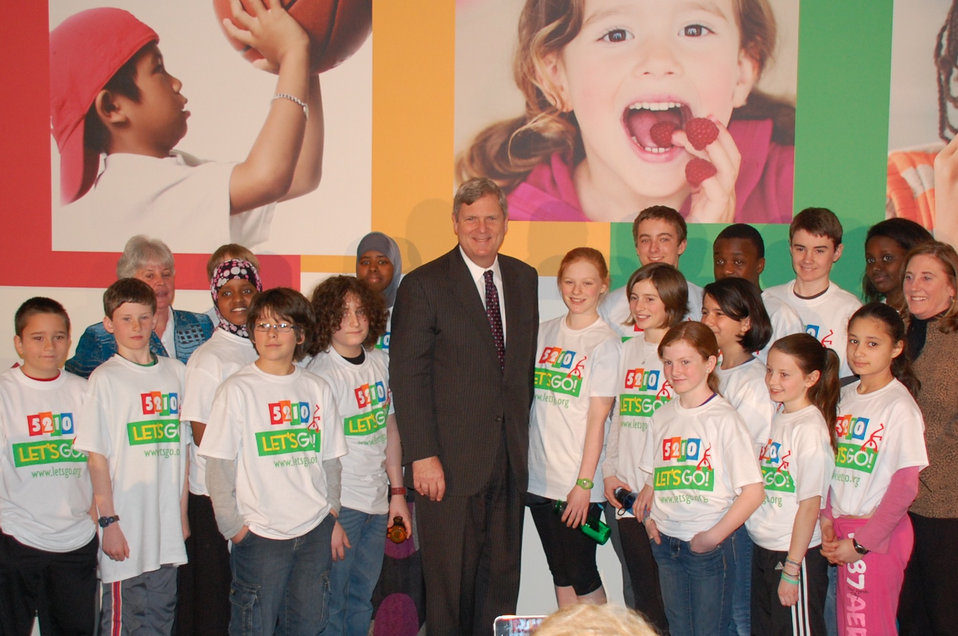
Agriculture Secretary Tom Vilsack stands with children at the Barbara Bush Children’s Hospital in Portland, ME on Thursday, Mar. 14, 2013. Secretary Vilsack spoke about the U.S. Department of Agriculture’s (USDA) efforts to improve childhood nutrition and prevent obesity in order to raise a healthier generation of Americans.